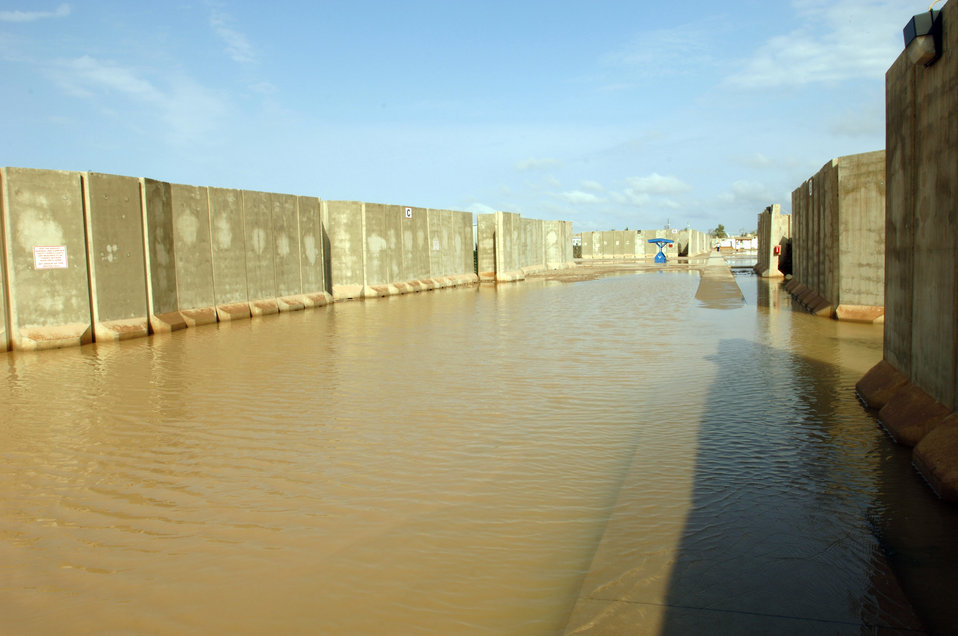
Can't stop the rain

Water floods a housing area Oct. 25 at Joint Base Balad, Iraq. Because rain is infrequent in Iraq, when it does rain, the hardened ground soaks up little water.